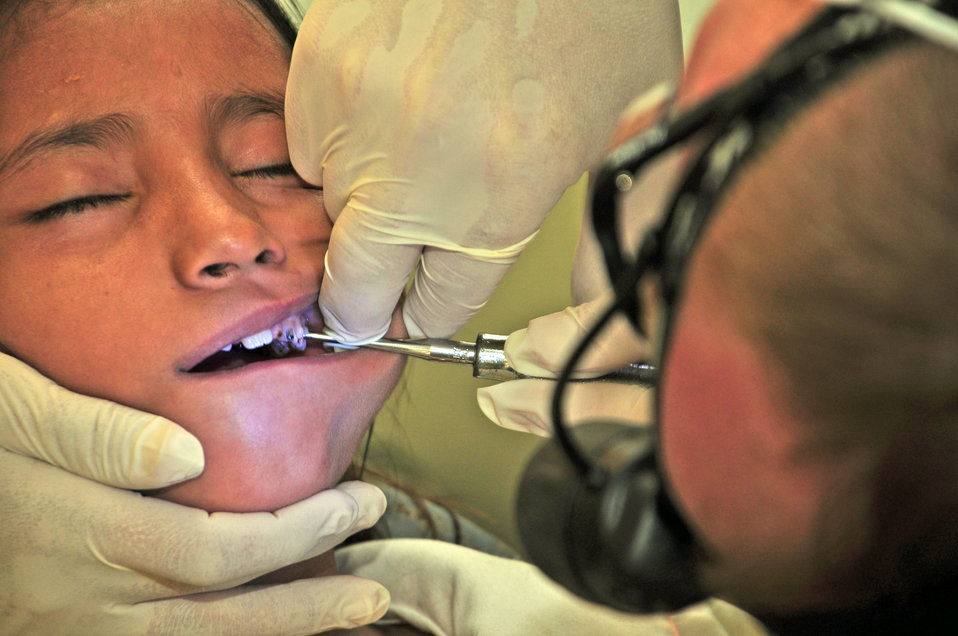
Soto Cano servicemembers provide 630 people medical care in Belize

A dentist with the Joint Task Force-Bravo medical readiness training exercise mission to Belize elevates a tooth from the gum line before extracting the tooth March 3, 2010, in Belize. The JTF-Bravo medical readiness training exercise team in conjunction with members from the Belize ministry of health and the Belize defense force provided medical care to more than 630 people from the villages of St. Margaret's and Armenia March 1 through 4.